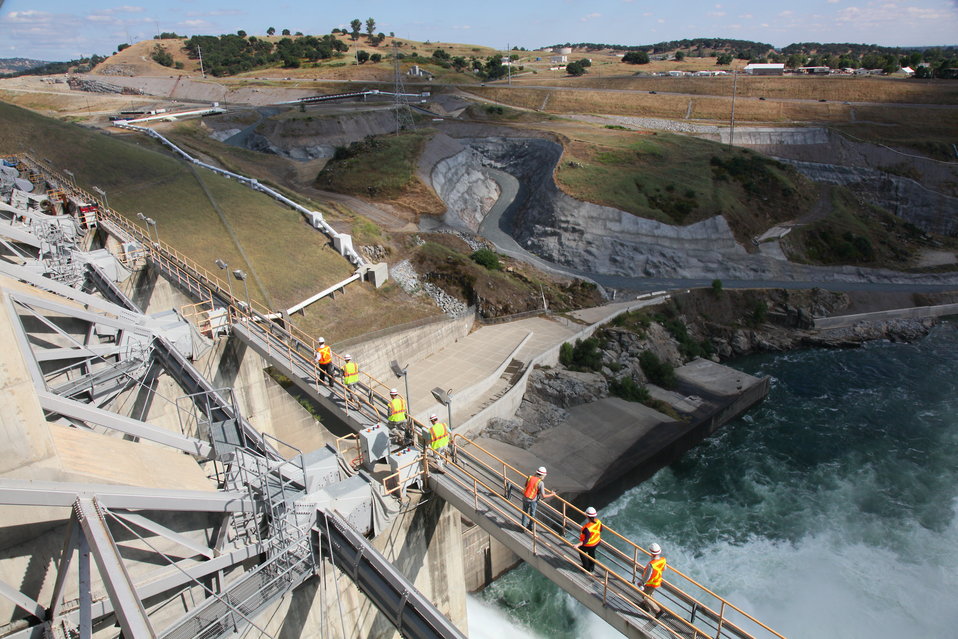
Corps’ Civil Works Leaders visit the Folsom Dam Joint Federal Project

Maj. Gen. William T. Grisoli, Deputy Commanding General for Civil and Emergency Operations for the U.S. Army Corps of Engineers, and other senior leaders from the Corps’ headquarters and South Pacific Division toured ongoing construction of the Folsom Dam auxiliary spillway June 29, 2011 in Folsom, Calif. Sacramento District project engineer David Neff briefed the group about the progress and construction timelines at the spillway during their visit.